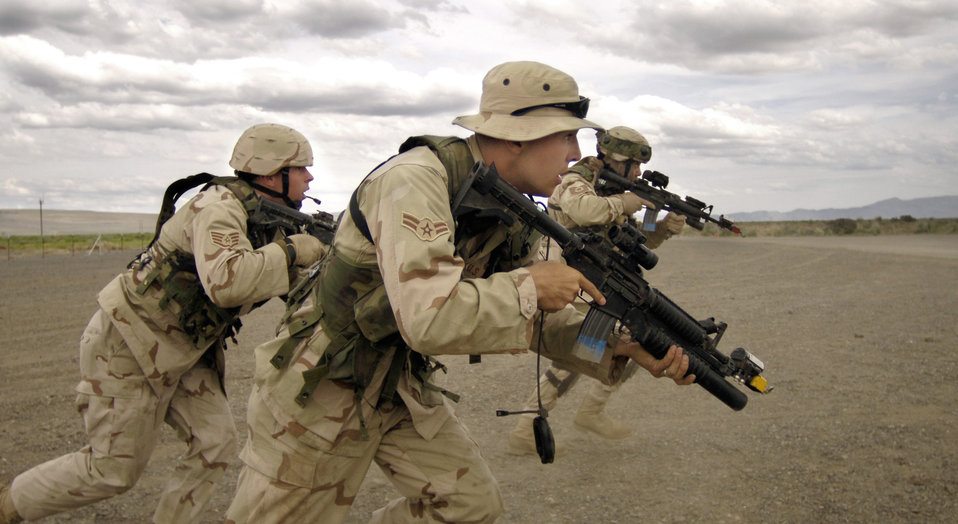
Lightning Fury

Security forces Airmen with the 615th Contingency Response Wing at Travis Air Force Base, Calif., rush toward a simulated threat during Lightning Fury, an airfield seizure exercise held at Amedee Field in Herlong, Calif., on Saturday, May 20, 2006.